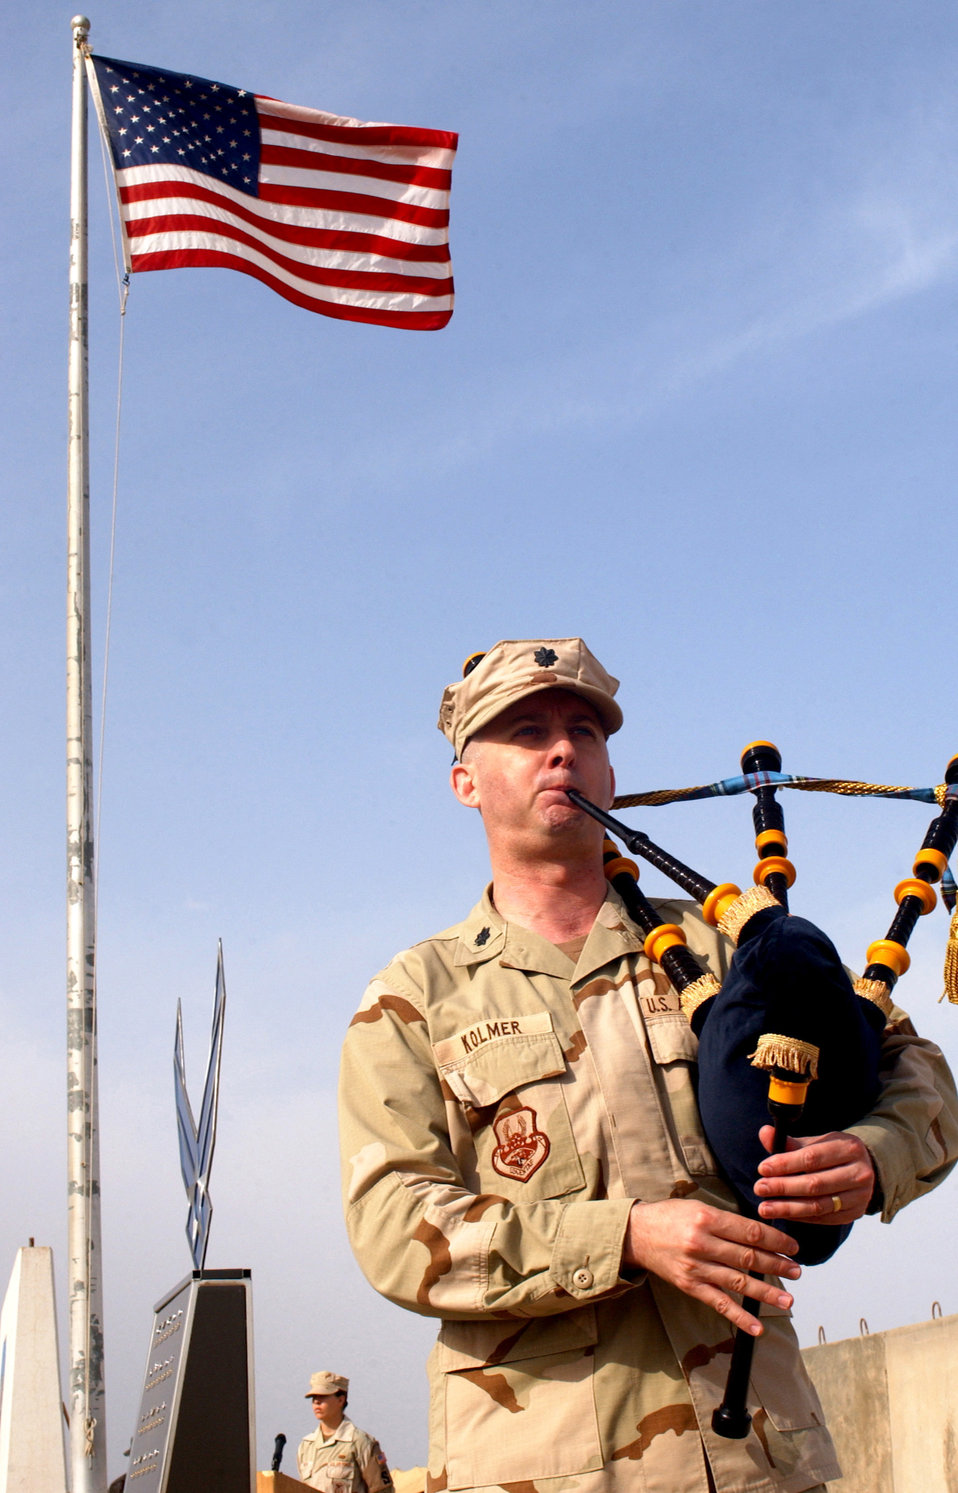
Fallen Airman Memorial recognized

Lt. Col. Dave Kolmer plays the bagpipes during a recognition ceremony for the Fallen Airman Memorial on Wednesday, April 26, 2006, at Ali Base, Iraq.